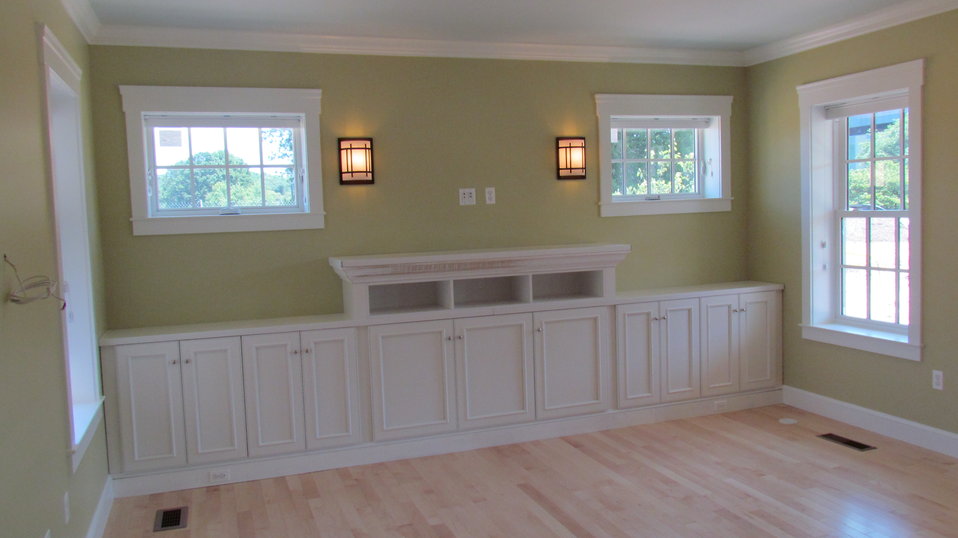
Photo showing family room located on the southeast corner of facility.